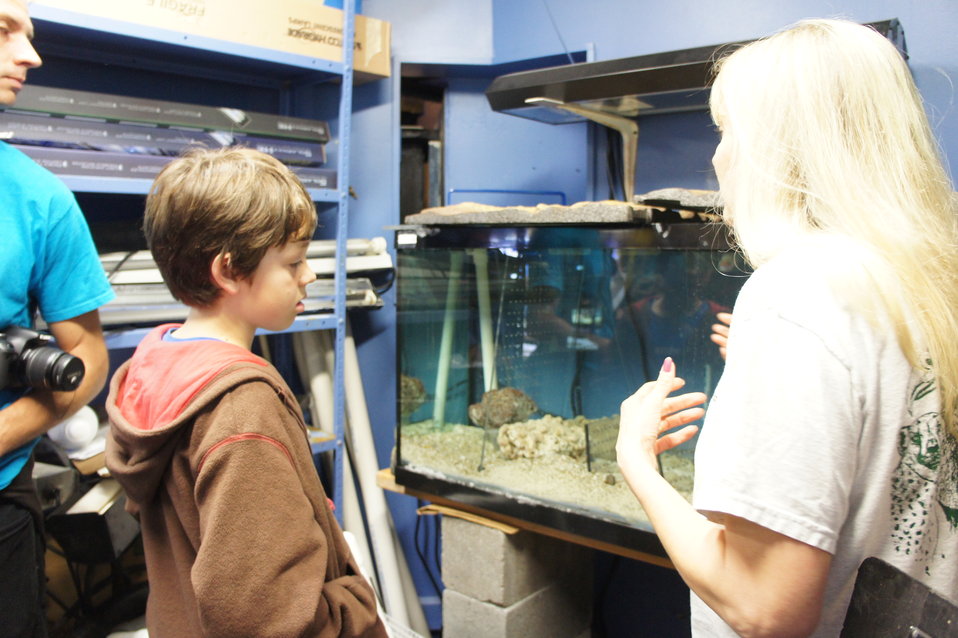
'Save the Nautilus' co-founder visits Smithsonian National Zoo

A biologist at the Smithsonian National Zoo shows Josiah Utsch, co-founder of www.savethenautilus.com, several nautilus eggs that the zoo is working to hatch. These eggs must be kept in a temperature- and light- controlled environment.